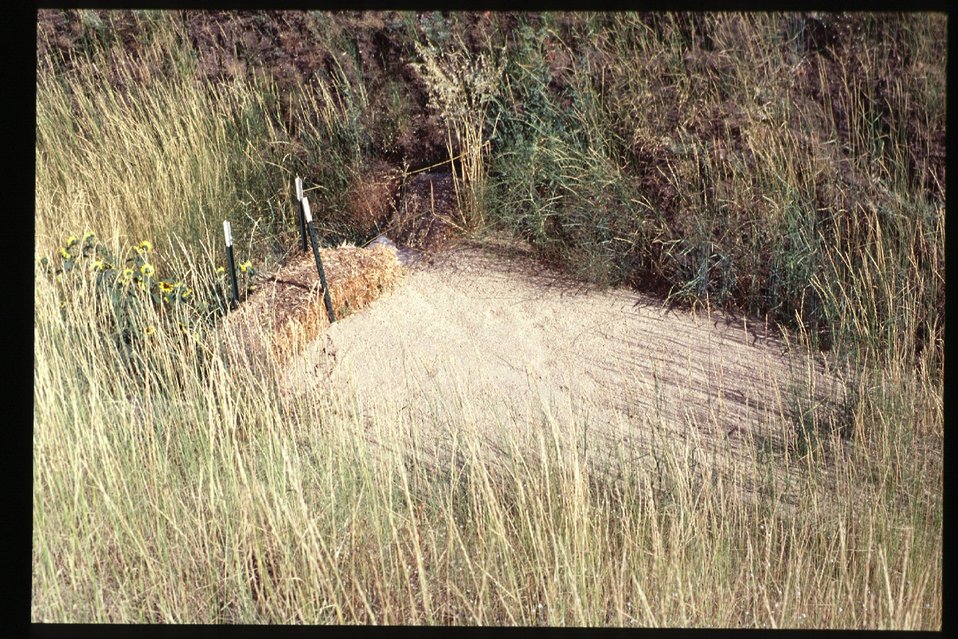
8th Street Fire Four Rivers Field Office LSRD Lower Snake River District